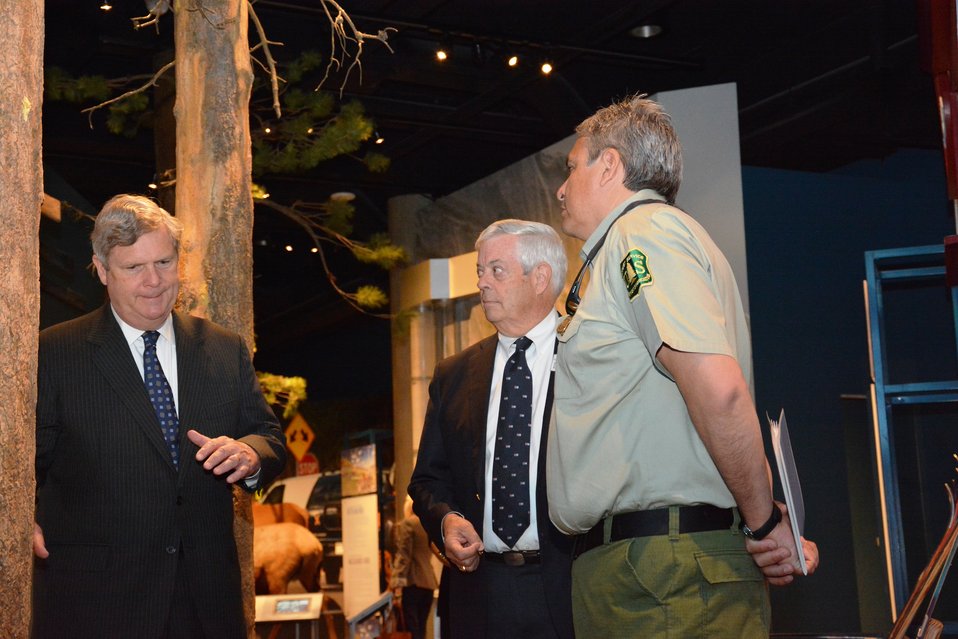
Agriculture Secretary Tom Vilsack discusses Mountain Pine Beetles with History Colorado President and CEO State Historic Preservation Officer Ed Nichols and Region 2 Regional Forester Dan Jir’on at the History Colorado Center in Denver, CO on May 20, 2014.